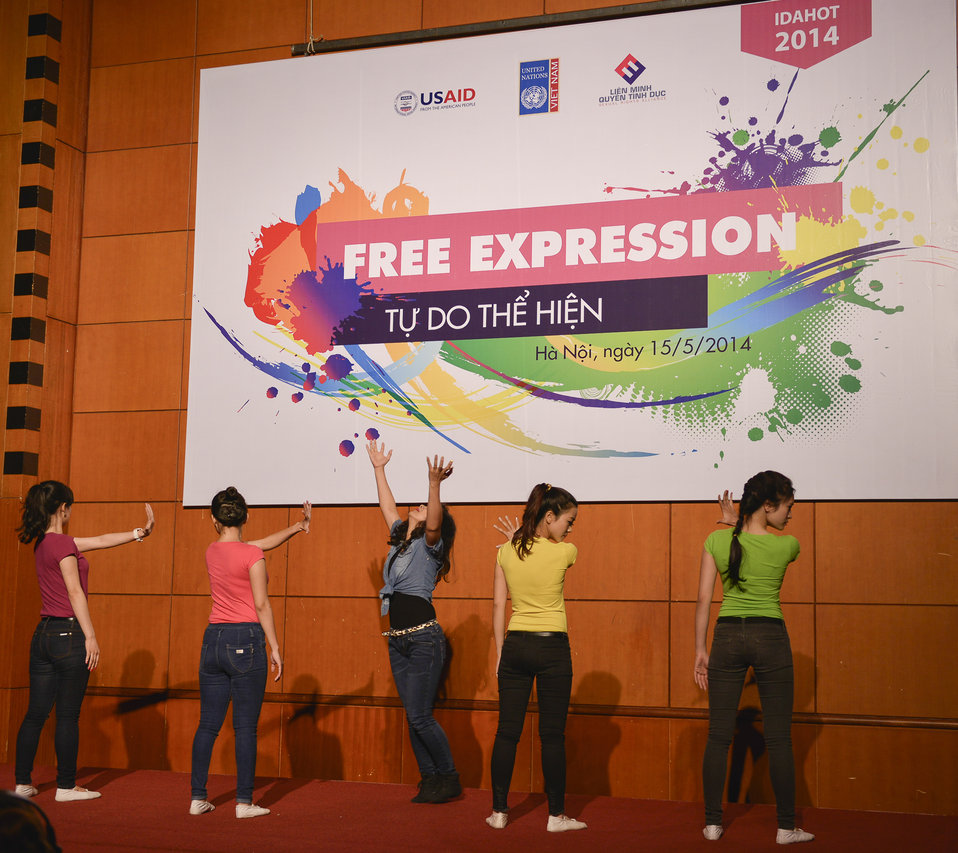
USAID supports celebration of IDAHOT Day 2014 in Hanoi

Hanoi, May 15, 2014.